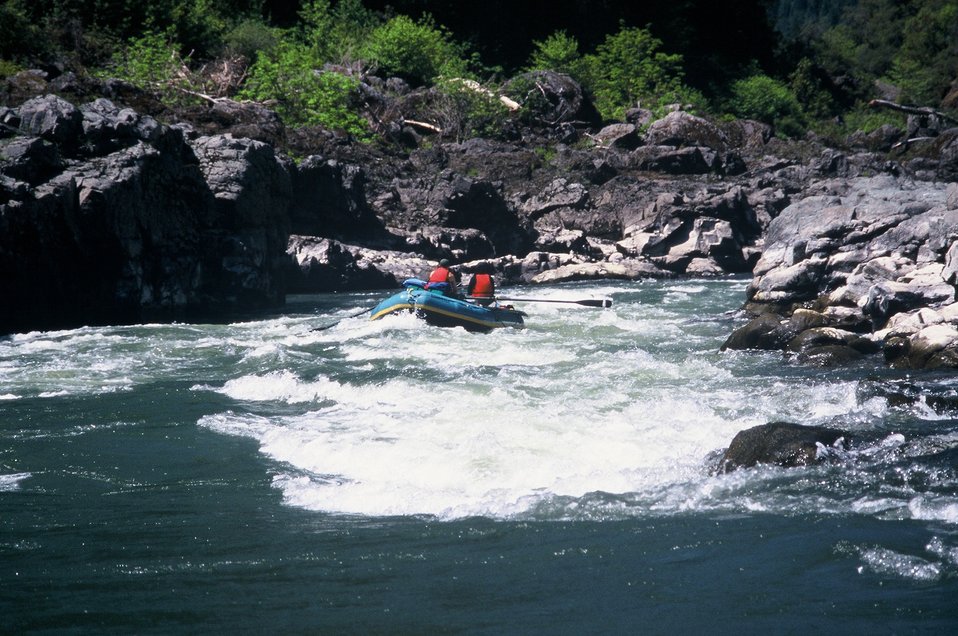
Wild section of the Rogue River from Grave Creek to Foster Bar May 19 to May 22.